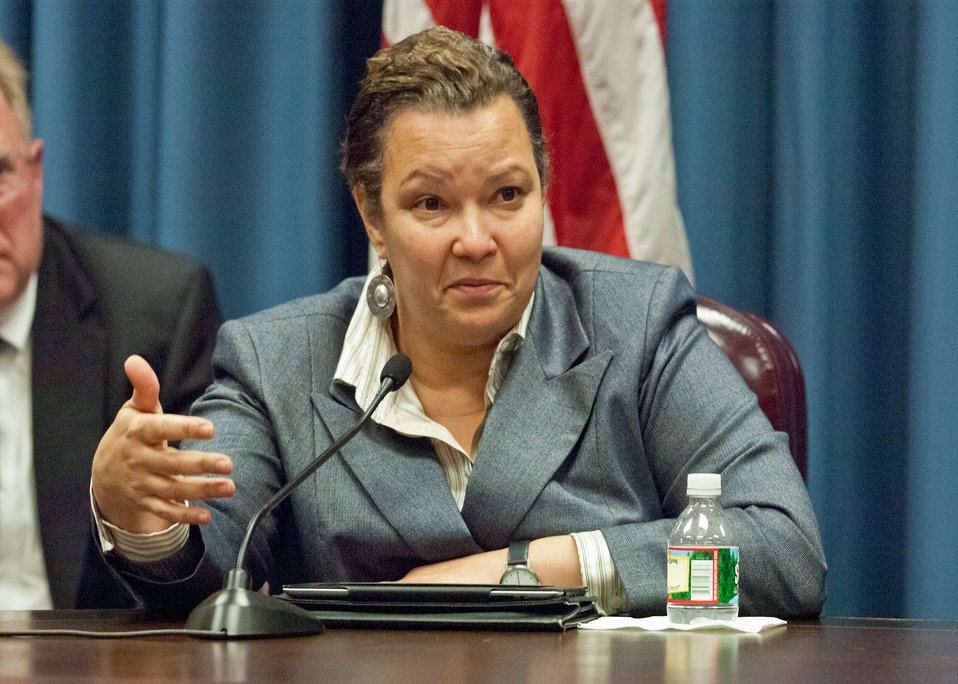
Lisa Jackson, Administrator, Environmental Protection Agency answers questions posed by members of commodity groups representing all aspects of agriculture. Administrator Jackson and Agriculture Secretary Tom Vilsack met with the commodity groups at the United States Department of Agriculture in Washington, D.C., to discuss mutual agricultural and environmental issues on Tuesday, December 14, 2011.